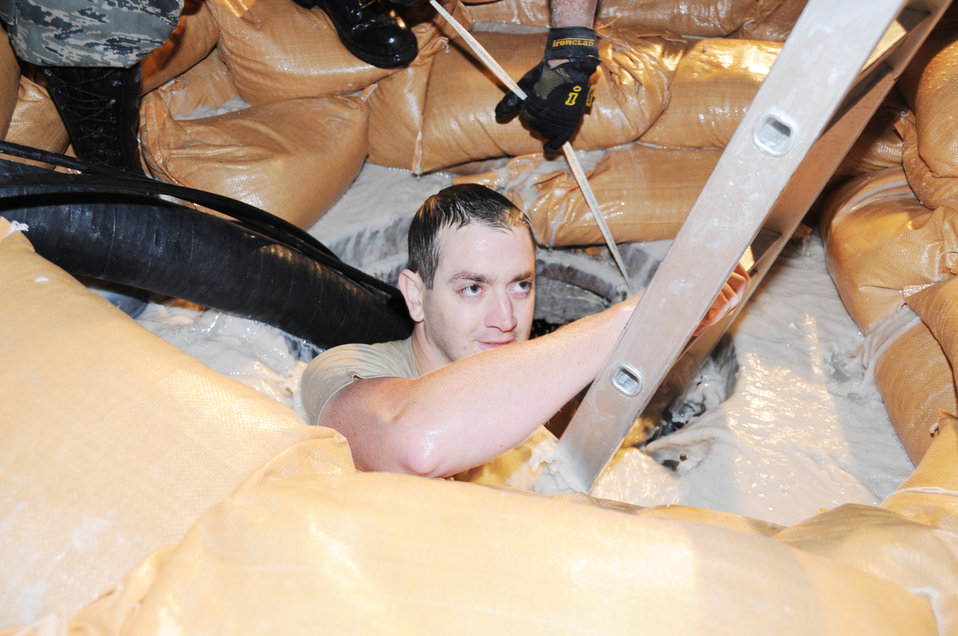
Mud bath extraordinaire

Senior Airman Bo Brauer descends into a flooding manhole to repair severed cables at a deployed location in Southwest Asia Dec. 14, 2009. Airman Brauer is a cable and antenna maintenance technician with the 379th Expeditionary Communications Squadron, and deployed from Ramstein Air Base, Germany.